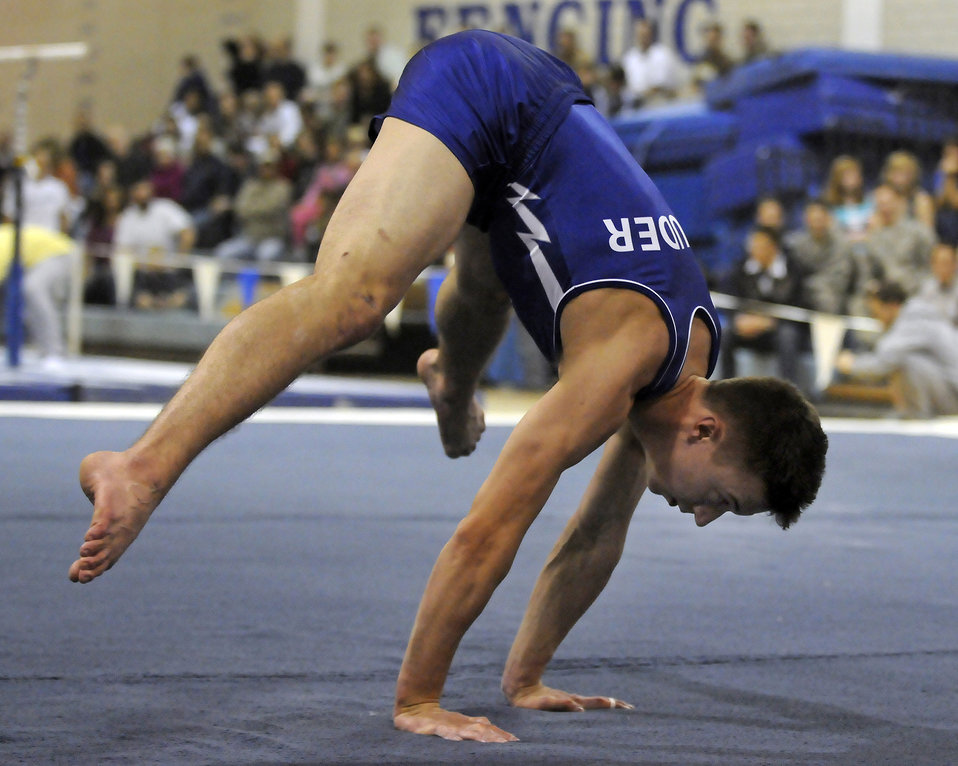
Airpower

U.S. Air Force Academy freshman Jacob Houder competes in the floor exercise during the annual Rocky Mountain Open Jan. 10 at the Academy in Colorado. The Falcons accounted for seven top-10 finishes as they placed third overall in the meet in front of a capacity crowd.